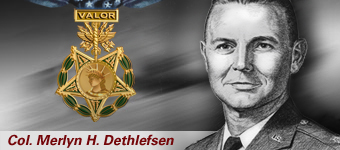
Col. Merlyn H. Dethlefsen, Medal of Honor recipient for actions in the Vietnam War.